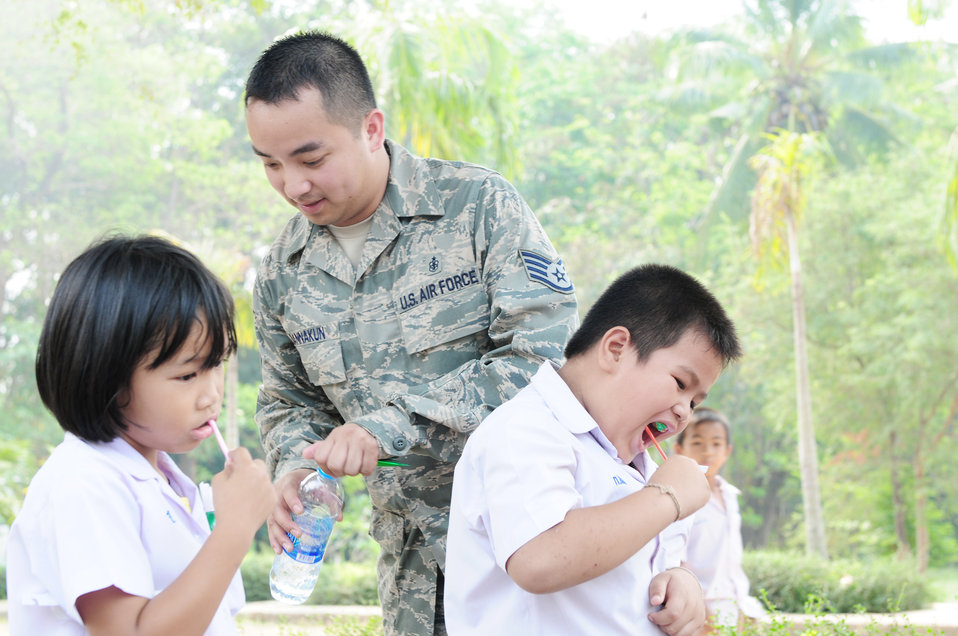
Multilateral team helps more than 1,500 Thai residents

Staff Sgt. Watthanakit Wannakun demonstrates proper dental cleaning techniques for two school children during a Cope Tiger 2010 medial civic assistance project March 9, 2010, in Thailand. Sergeant Wannakun is assigned to 18th Medical Group at Kadena Air Base, Japan.